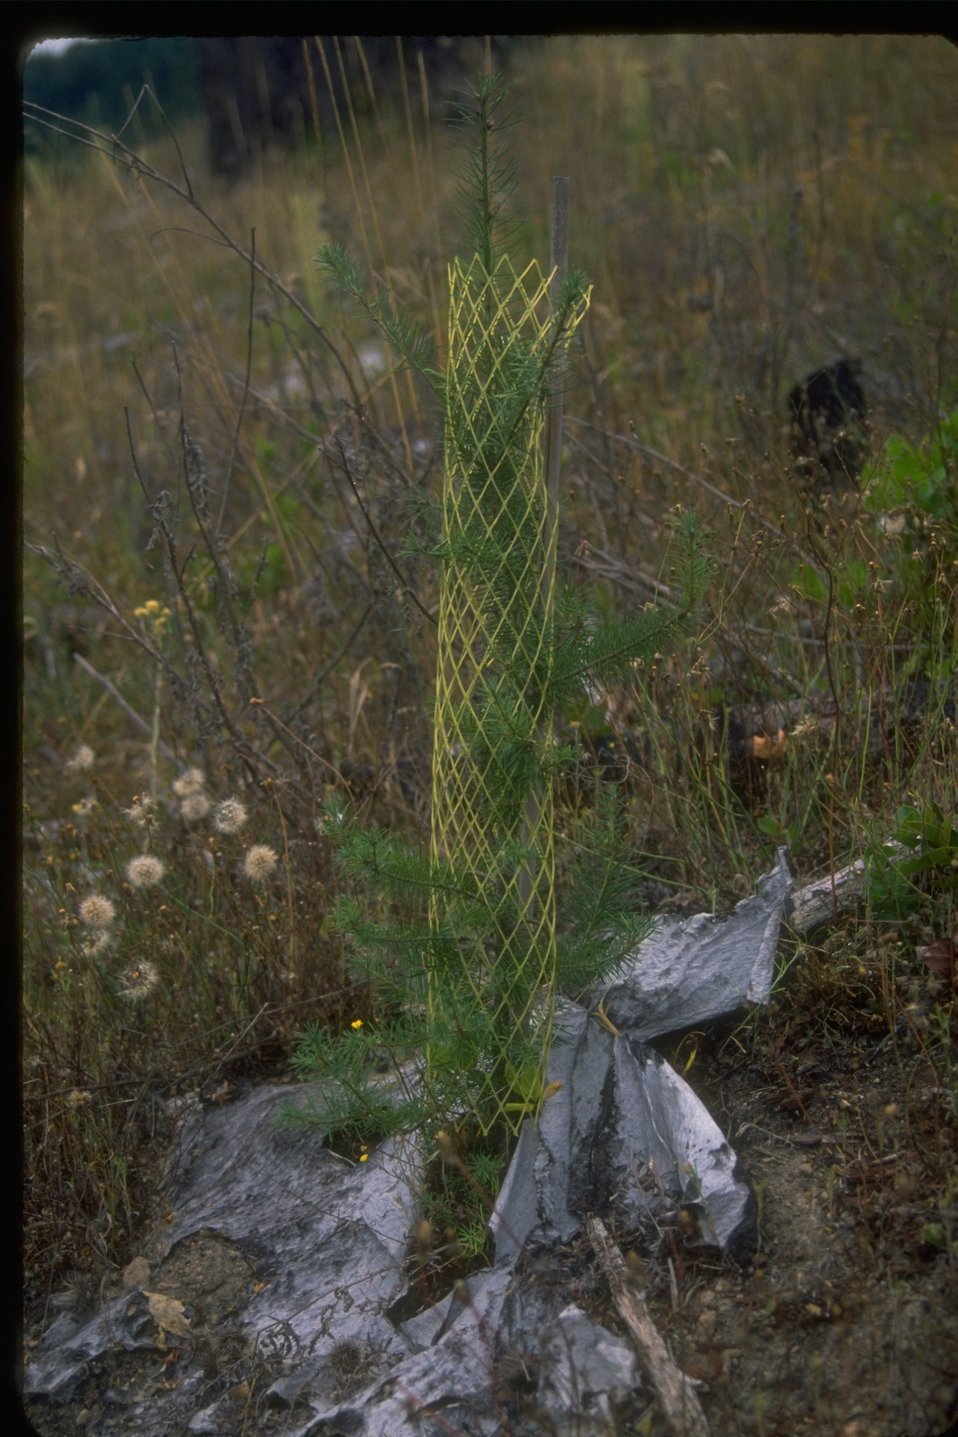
A young tree wrapped in plastic netting for protection.